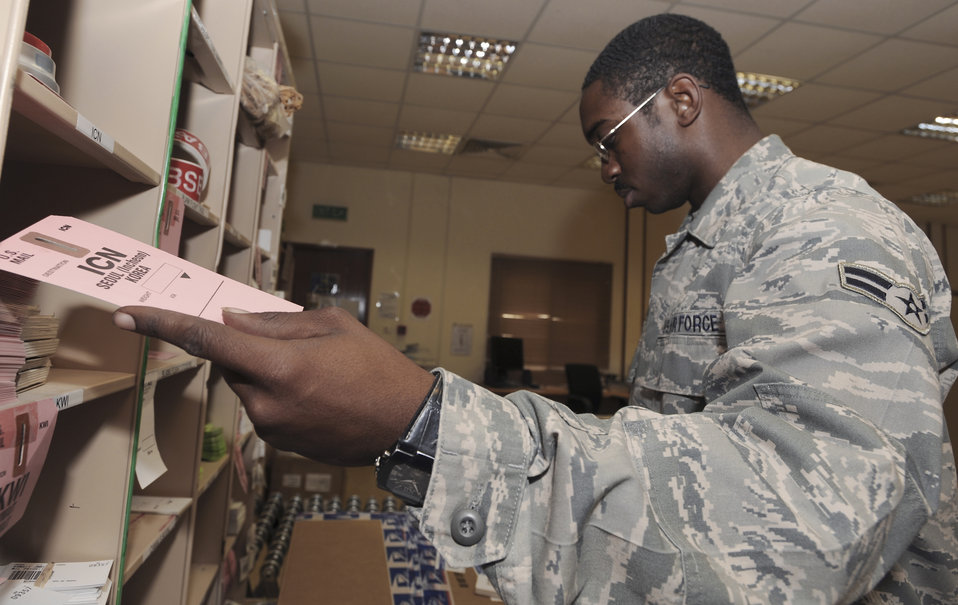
Postal workers deliver pieces of home through mail

Airman 1st Class Cardell Polk stages packages to be picked up for transport April 20 at an air base in Southwest Asia. Throughout the day, outgoing mail is prepped for transport to the international airport for further delivery. Airman Polk is native to New Orleans and is deployed from Pope Air Force Base, N.C. He is a postal clerk with the 379th Expeditionary Communication Squadron.